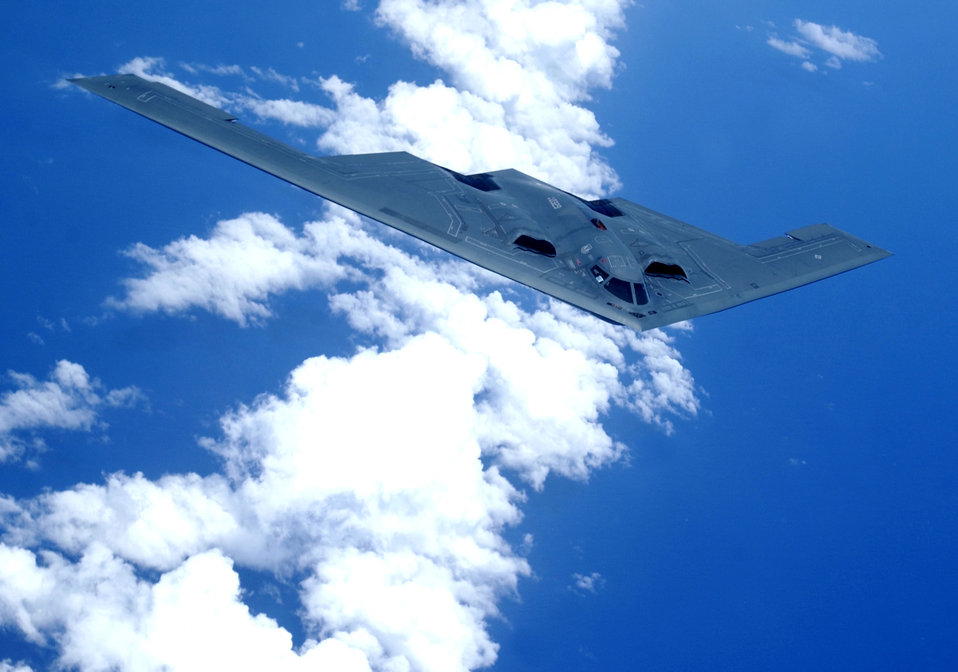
A Pacific spirit

OVER THE PACIFIC OCEAN -- A B-2 Spirit soars through the sky after a refueling mission here May 2. The B-2 is assigned to the 393rd Expeditionary Bomb Squadron from Whiteman Air Force Base, Mo. The bomber is currently deployed to Andersen AFB, Guam, as part of a continuous bomber presence in the Asia-Pacific region.